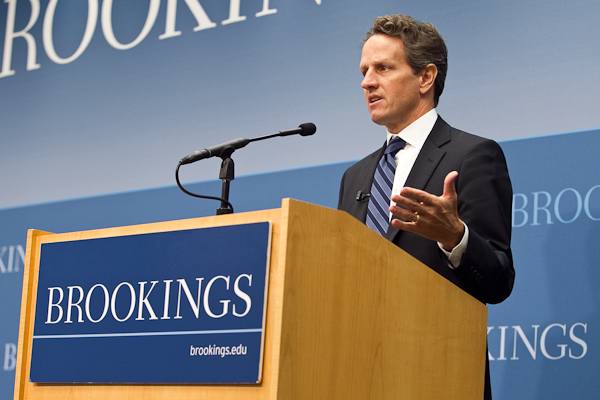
Brookings Institution, 10/06/2010

At the Brookings Institution, Secretary Geithner outlined U.S. objectives for this week’s Annual Meetings of the International Monetary Fund (IMF) and World Bank as well as the upcoming meeting of G-20 Finance Ministers in Korea. He discussed the global economy’s unprecedented cooperative efforts to restart economic growth and stabilize financial markets and addressed how to strengthen the pace of growth and repair in a way that provides for a more balanced and sustainable global economic recovery.